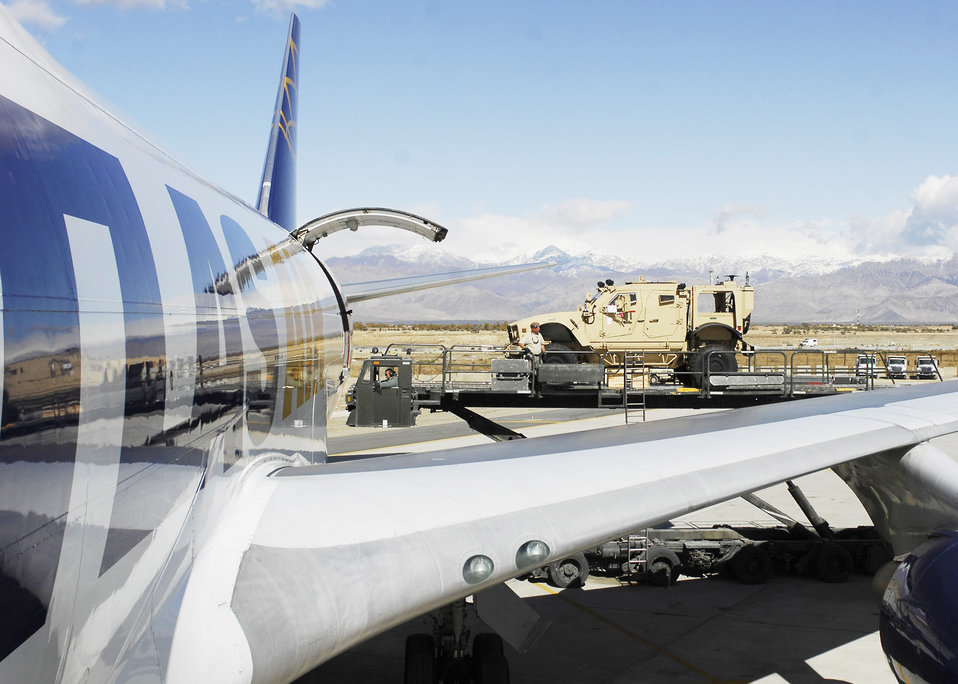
Bagrams new arrivals

Tech. Sgt. Gordon Criswell stands next to a mine-resistant ambush-protected all-terrain vehicle making sure it doesn't move, while the K-loader lowers it to the ground Nov. 9, 2009 at Bagram Airfield, Afghanistan. Sergeant Criswell is an air transportation specialist from the 455th Expeditionary Aerial Port Squadron. The M-ATV is designed to replace the up-armored Humvee in Afghanistan.